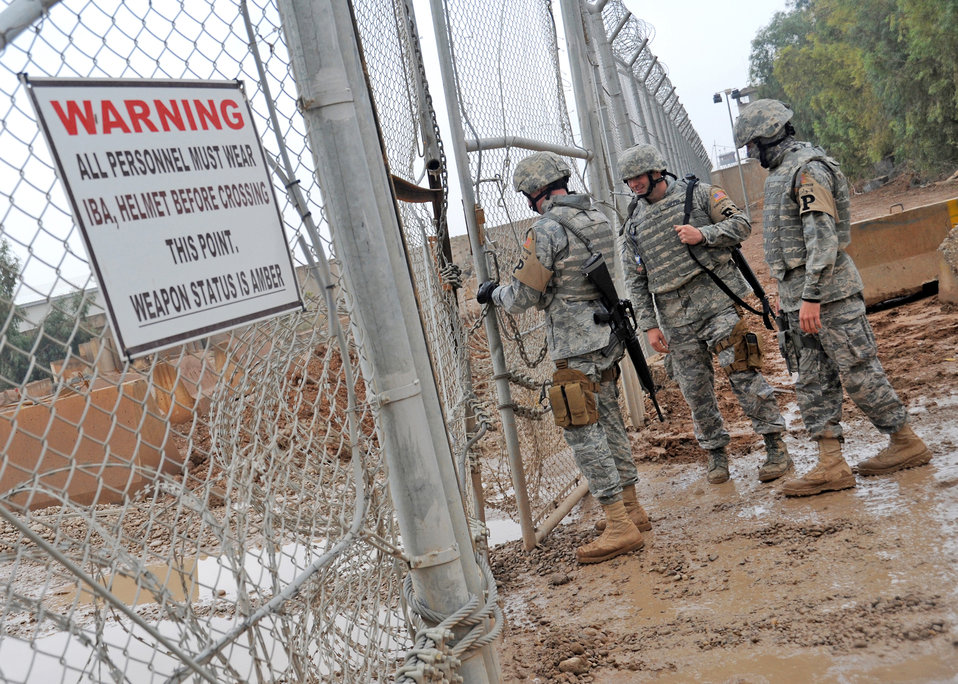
Force protection Airmen add another layer of armor in base defense

332nd Expeditionary Civil Engineer force protection escorts prepare to conduct a sweep for contraband items left by local nationals at the gravel yard Nov. 19, 2009 at Joint Base Balad, Iraq. Airmen deployed as FP escorts protect resources while providing safety and security on JBB.